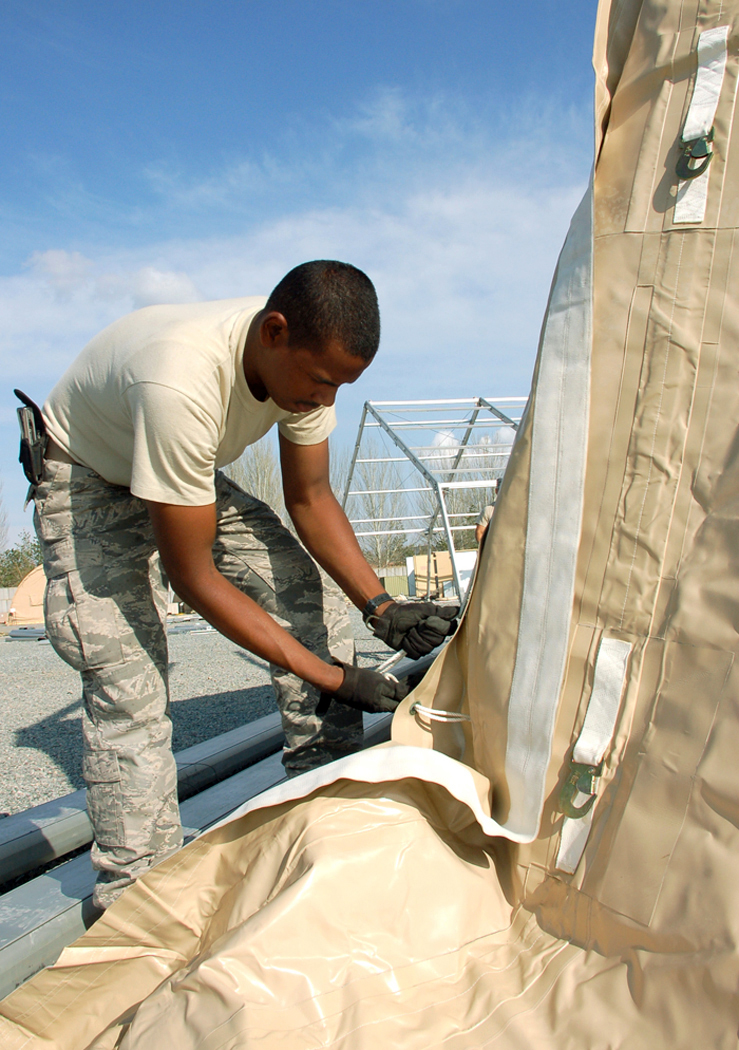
BEAR builds new quarters for forces at Manas

Staff Sgt. Timothy Robinson laces together the front panels of a 4,000-square-foot dome shelter being built March 30 at Manas Air Base, Kyrgyzstan. The tents are being erected in preparation for the increased number of coalition personnel transiting through Manas to and from Afghanistan. Sergeant Robinson is assigned to a nine-person Basic Expeditionary Airfield Resources team deployed to Southwest Asia. He is deployed from Holloman Air Force Base, N.M.